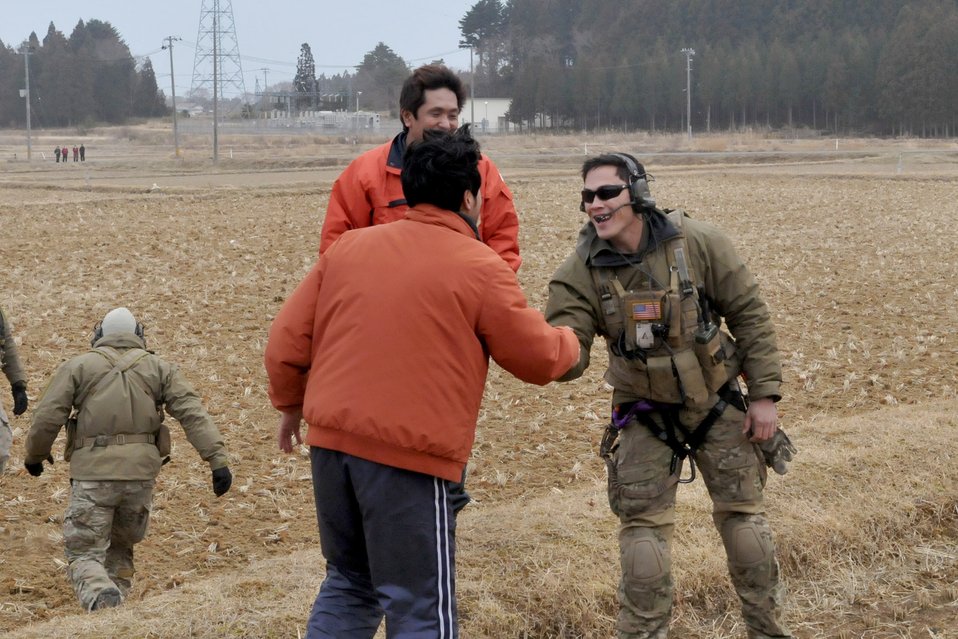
Supporting Operation Tomodachi

An Airman speaks with Japanese relief workers after HH-60 Pave Hawk crewmembers delivered food, water and medical supplies March 20, 2011, for displaced people in Kessenuma City, Japan.